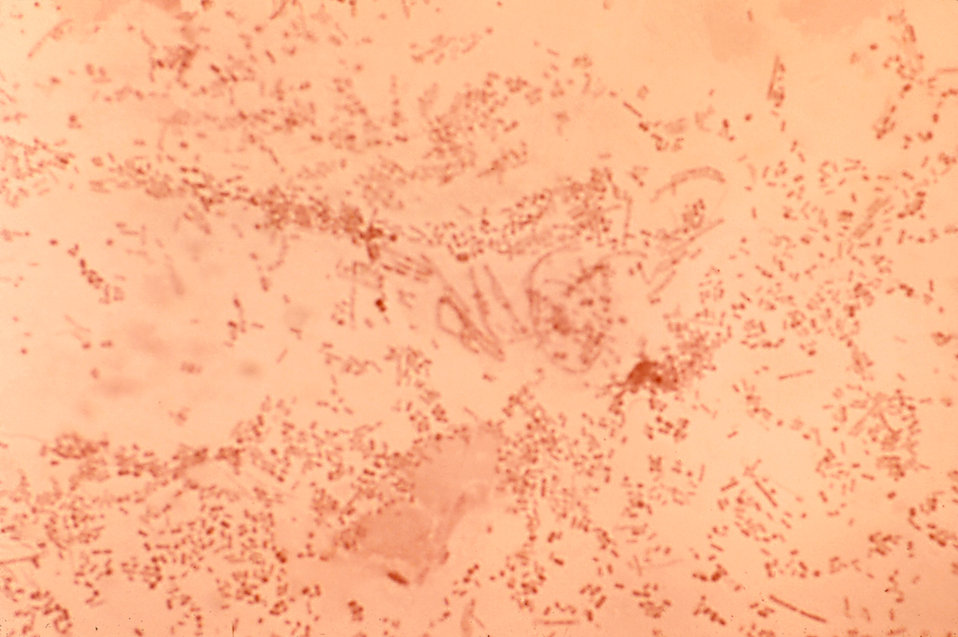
This direct smear microscopic exam revealed the presence of Haemophilus ducreyi indicative of a chancroid infection.